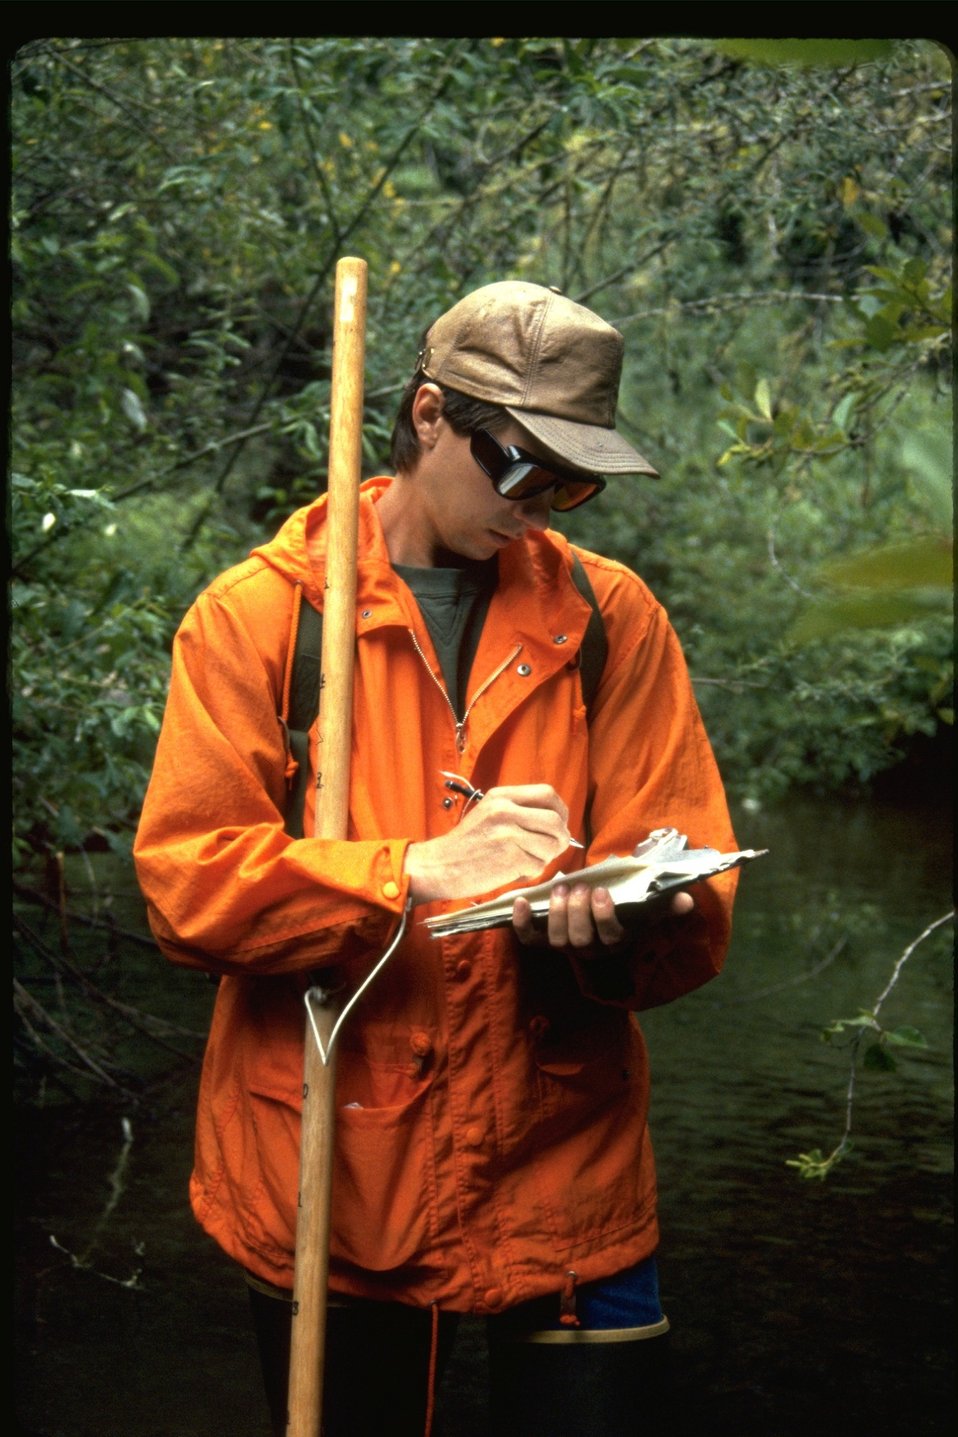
Russ surveying Smith Creek during habitat study.